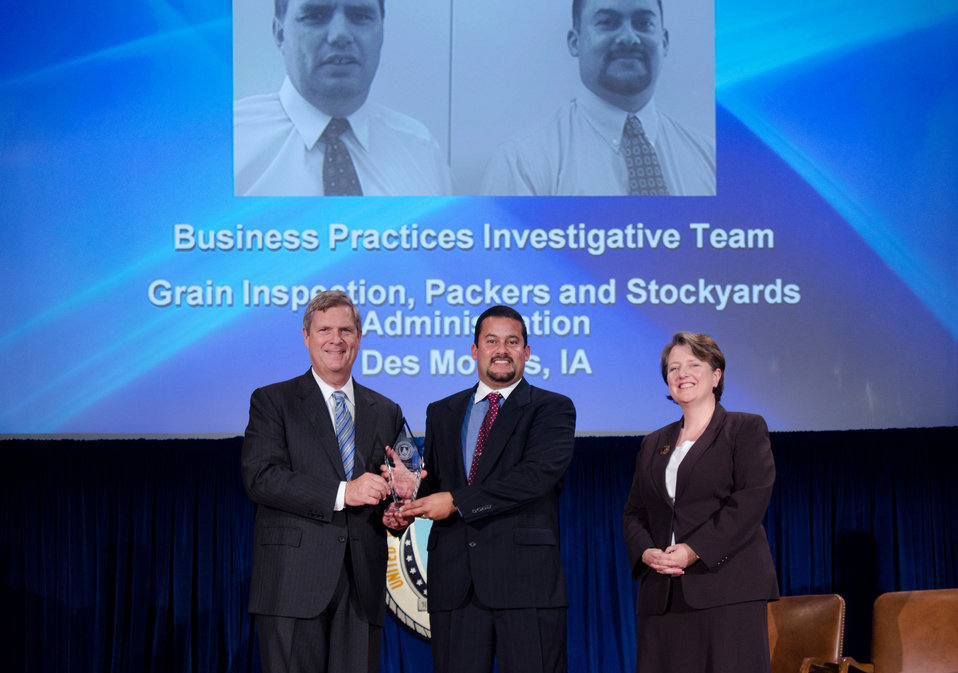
Agriculture Secretary Tom Vilsack (l) and Deputy Secretary Kathleen Merrigan (r), presents the Assisting, Rural Communities To Create Prosperity So They are Self-Sustaining, Repopulating, and Economically Thriving Award to Business Practices Investigative Team. Grain Inspection, Packers and Stockyards Administration, Des Moines, IA. William Arce-Arana, Group Leader. In recognition of your dedicated and professional efforts returning over $1 million to 2,382 producers who sold hogs to a packer that used an unfair and deceptive carcass evaluation program. On Wednesday, September 14, 2011 in the Jefferson Auditorium at the US Department of Agriculture in Washington, DC.